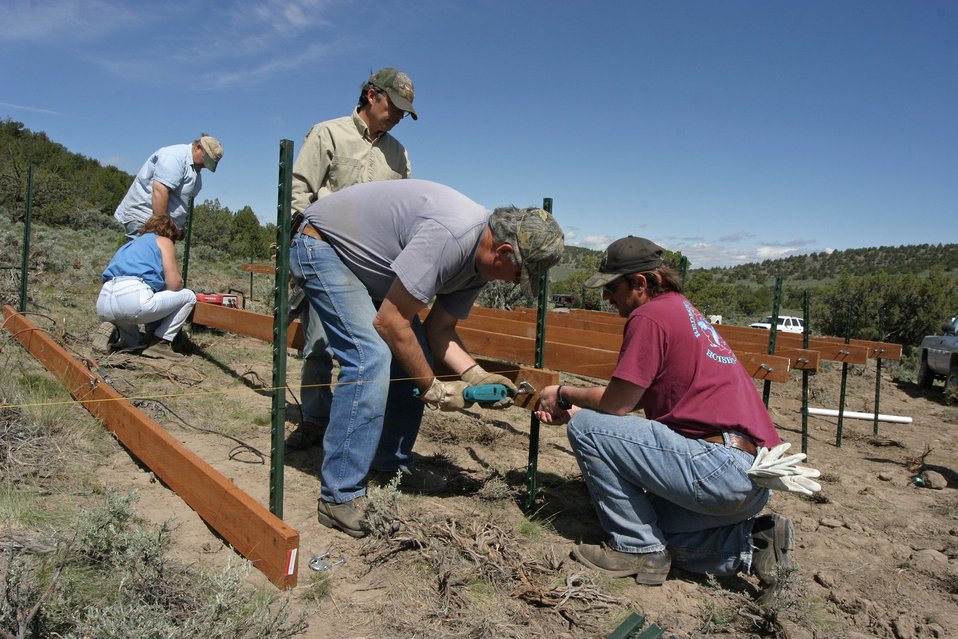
Volunteers help BLM build guzzlers to provide water for wildlife.